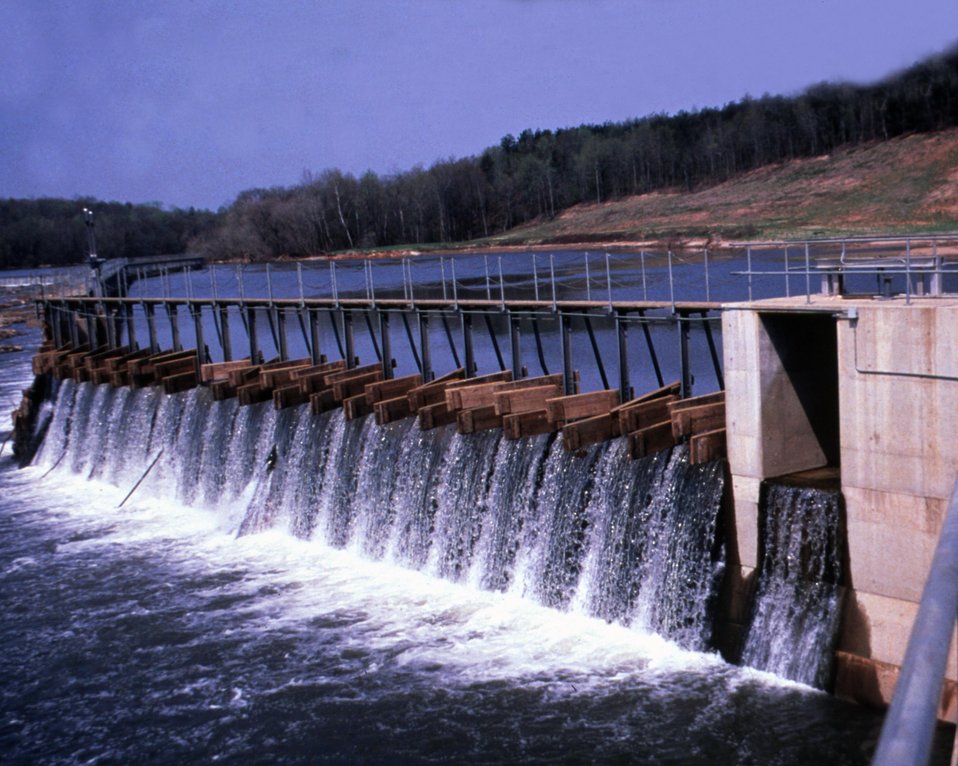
GENERAL VIEW OF FLASH BOARDS.

THE DOE SMALL-SCALE HYDROPOWER PROGRAM CONSISTS OF 19 PROJECTS AND DEMONSTRATES THE VIABILITY OF SMALL-SCALE HYDRO-POWER WITH AVAILABLE TECHNOLOGY. THE BROAD RIVER PROJECT, BEGUN IN JANUARY, 1983, WENT ON LINE DECEMBER 27, 1987. UTILIZING ONE OPEN-PIT TUBULAR TURBINE THAT PRODUCES A MAXIMUM OF 4,140 KILOWATTS, THE DAM PROVIDES A GROSS HEAD OF 20.2 FEET WITH AN ANNUAL STREAM FLOW OF 2,472 CFS.